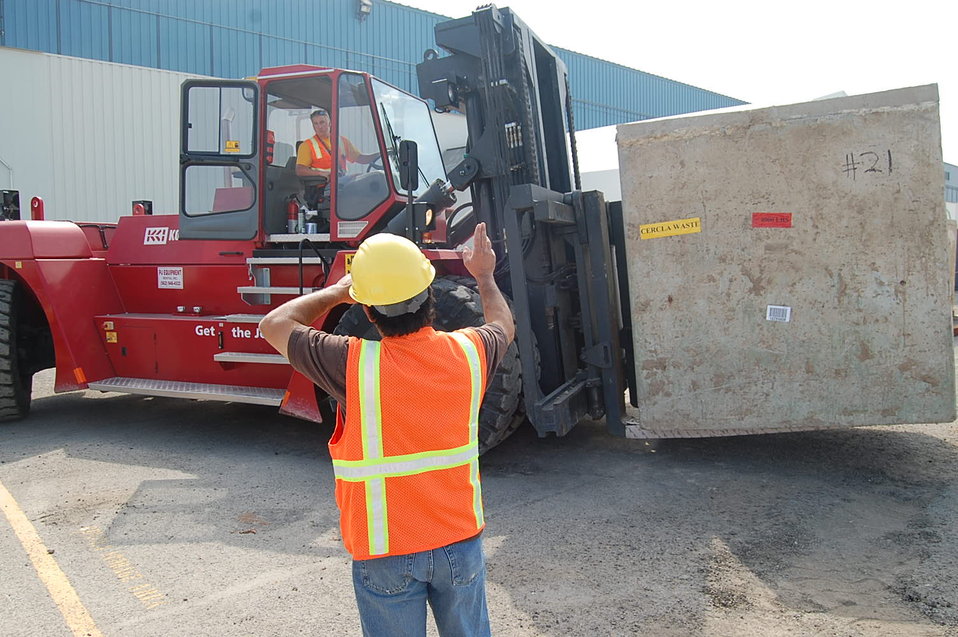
Idaho’s Advanced Mixed Waste Treatment Project Workers Complete Recovery Act Project

In the expedited waste removal funded by more than $22 million from the Recovery Act, the workers safely retrieved, treated, and shipped close to 4,800 cubic meters of radioactive waste — which would fill two Olympic swimming pools — from the Cold War legacy to permanent disposal facilities.